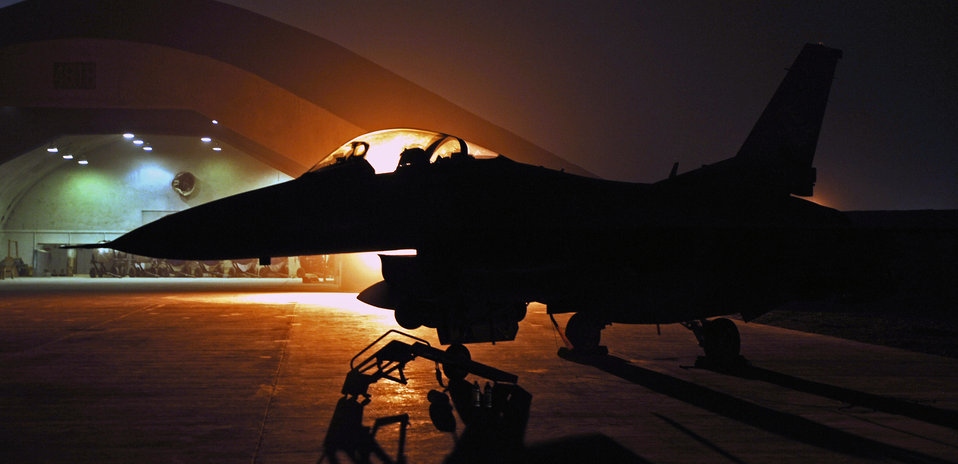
Lurking in the shadows

An F-16 Fighting Falcon waits in front of a hardened aircraft shelter at Joint Base Balad, Iraq, Sept. 24. The F-16 is deployed to the 332nd Expeditionary Fighter Squadron from the Oklahoma Air National Guard's 138th Fighter Wing. The F-16s arrived Sept. 18 to assist in executing the Air Tasking Order in support of Operation Iraqi Freedom.